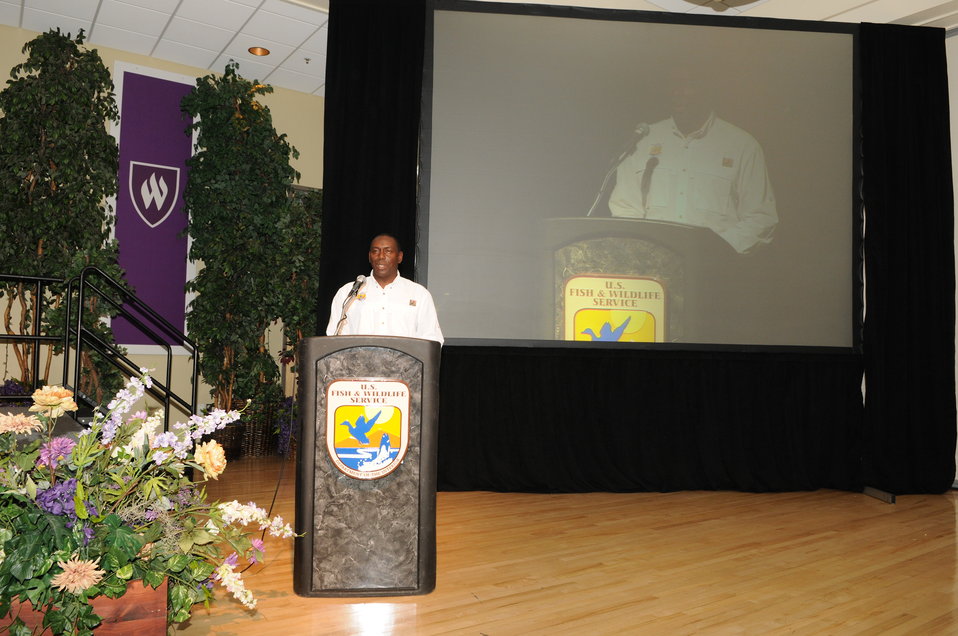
Day 2 Opening Remarks

The U.S. Fish & Wildlife Service sponsored the 2012 Federal Duck Stamp Art Contest September 28 and 29 in Ogden, Utah, at Weber State University. A panel of five judges was responsible for choosing the art work used to design the 2013-2014 Migratory Bird Hunting and Conservation Stamp.